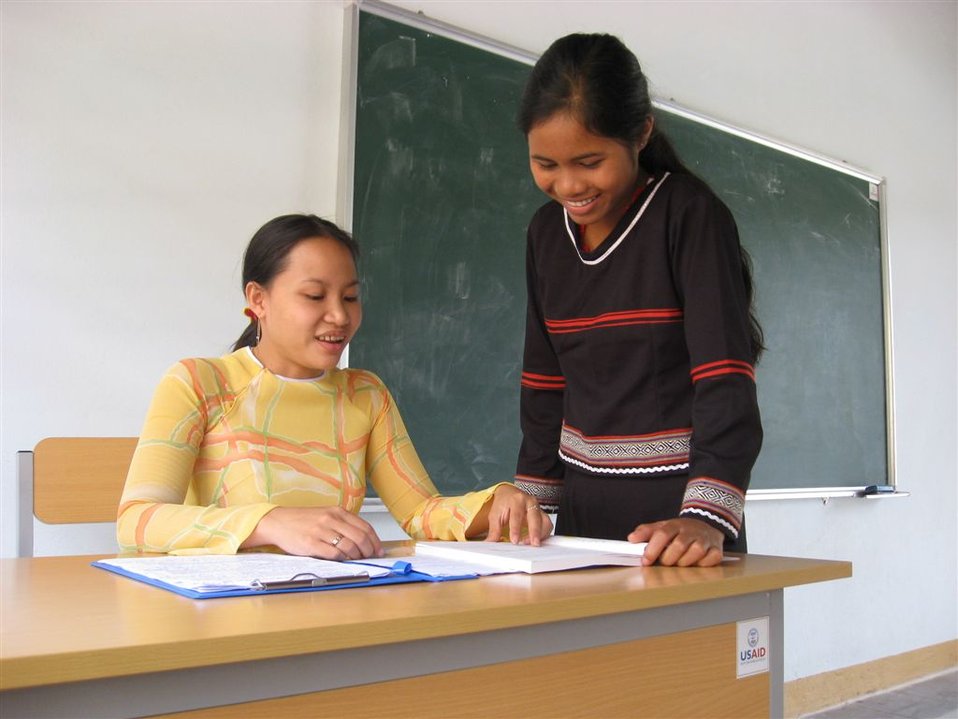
A teacher explains a lesson at the Kon Ray school.